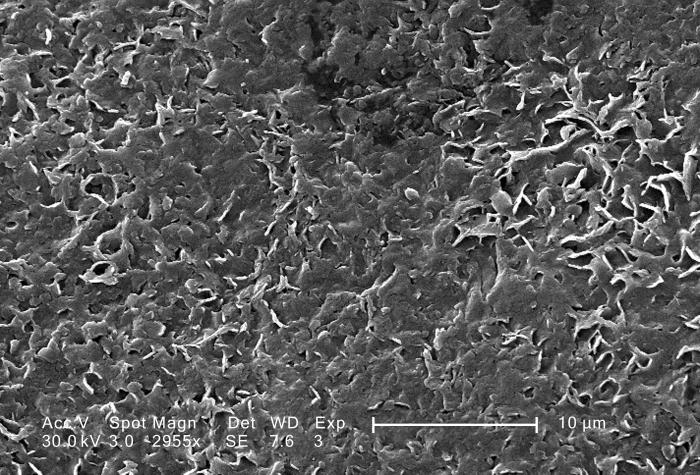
This scanning electron micrograph (SEM) shows the magnified rough surface of a Vitis sp., white table grape; Magnified 2955x. Note that what would appear to be a smooth surface by the unaided eye, is actually a roughened surface, capable of harboring bacteria in its cracks and crannies, and therefore, should be thoroughly washed before consuming these scrumptious fruits.Fresh Facts: